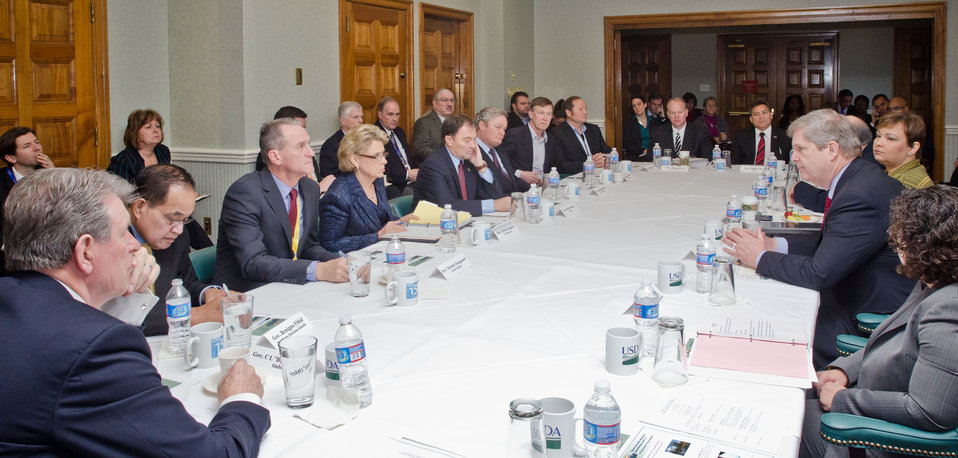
Agriculture Secretary Tom Vilsack hosted a breakfast for Western Governors and Federal Officials, in the Lincoln Room at the United States Department of Agriculture headquarters, on Sunday, February 26, 2012.